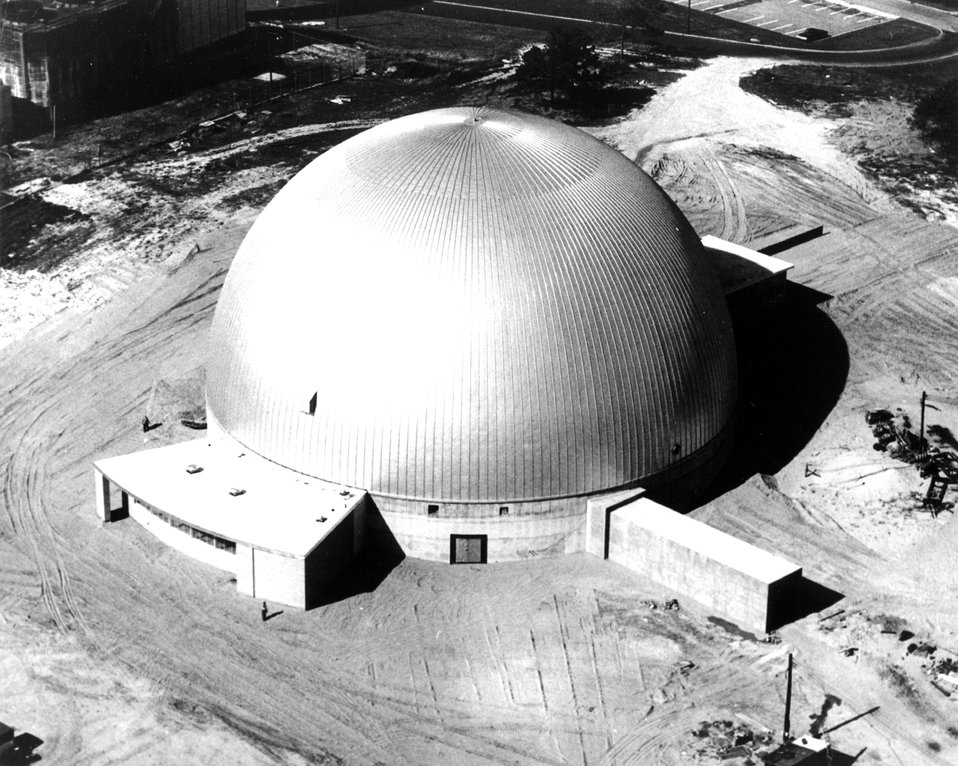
Aerial photgraph of the containment vessel for the High Flux Beam Research Reactor. c. 1963